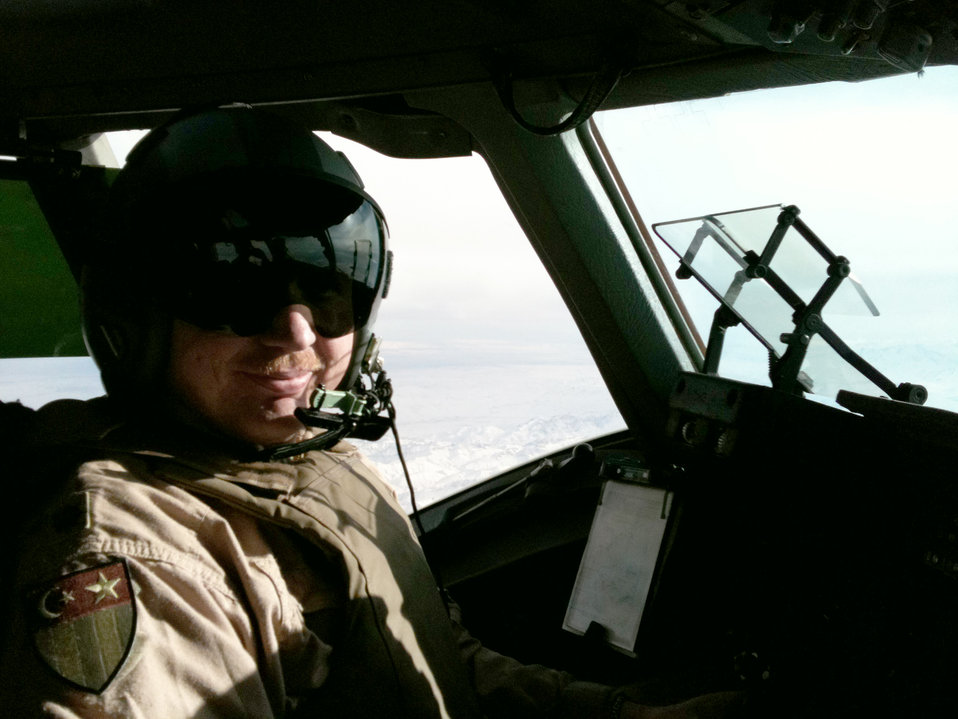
Career spans two services, two wars

Maj. Roy Bentley flies a C-17 Globemaster III during his latest deployment to Southwest Asia in March 2011. Major Bentley is currently deployed with the 817th Expeditionary Airlift Squadron in Southwest Asia.